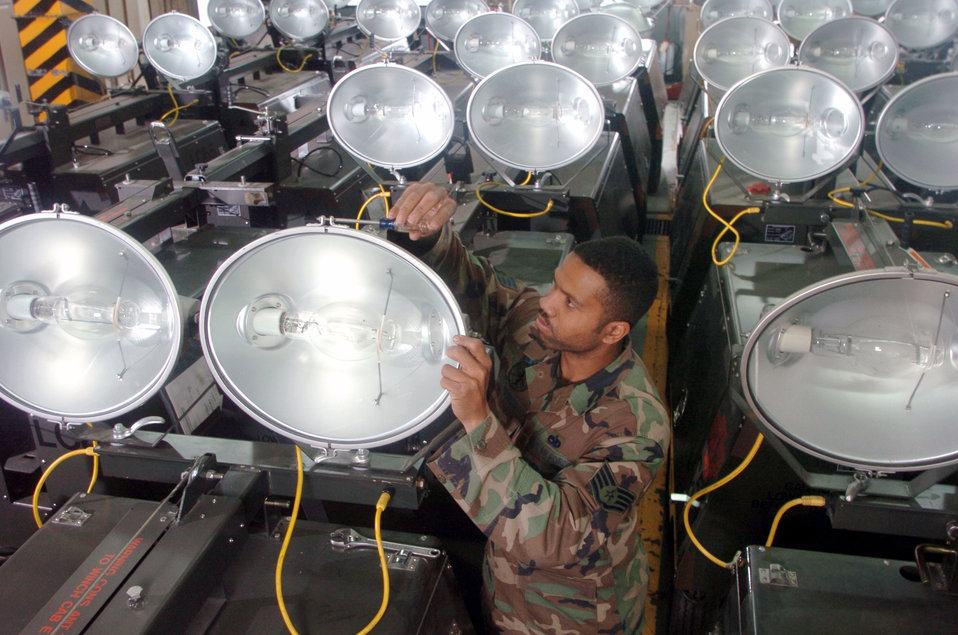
Shining a light on things

YOKOTA AIR BASE, Japan -- Staff Sgt. Howard Sherman tightens the protective lens cover on a portable floodlight assembly during an inspection here. He is an aerospace generation equipment mechanic assigned to the 374th Maintenance Squadron.